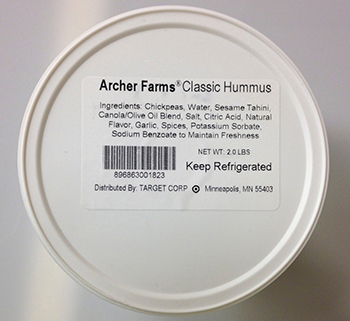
RECALLED – Hummus and dip products

May 19, 2014 – Product Recall – Lansal, Inc. Voluntarily Recalls Hummus & Dip Products Due to Possible Health Risk.